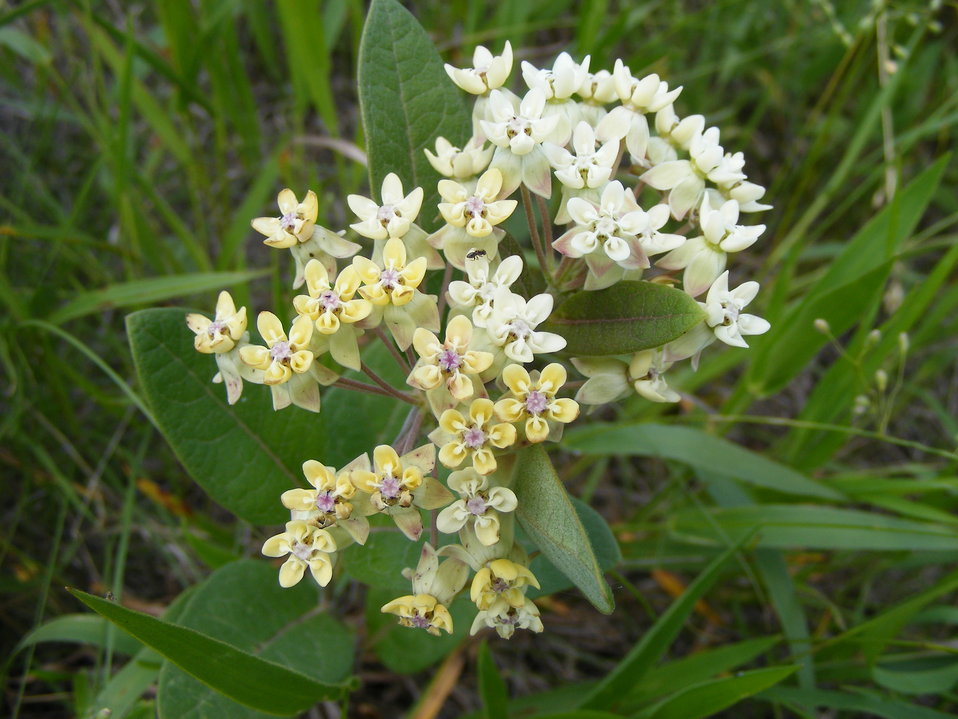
Ovalleaf Milkweed

One of 12 species of milkweed that occur in South Dakota.